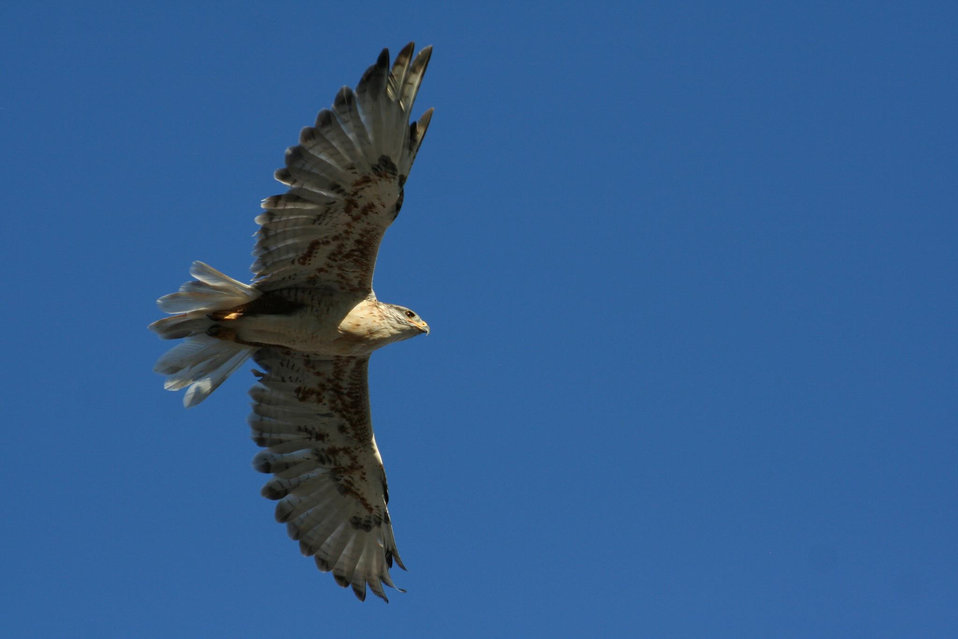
raptor at Ash Meadows NWR

Ash Meadows National Wildlife Refuge, NV
November 2011